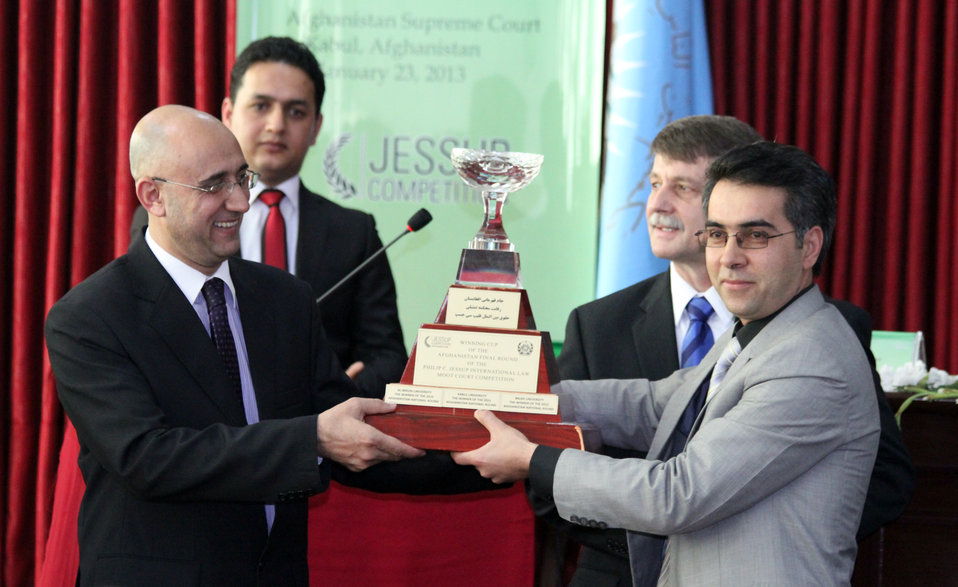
Afghanistan Final National Round of the 2013 Philip C.Jessup International Law Moot Court Competition